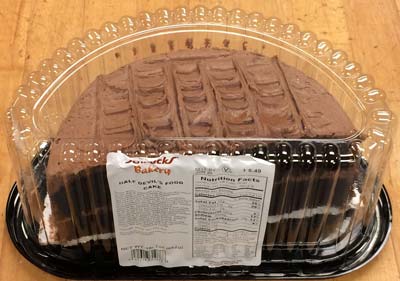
RECALLED – Cake

June 13, 2014 – Schnucks Bakery Recalls Devil’s Food Cakes Topped With Undeclared Pecans.